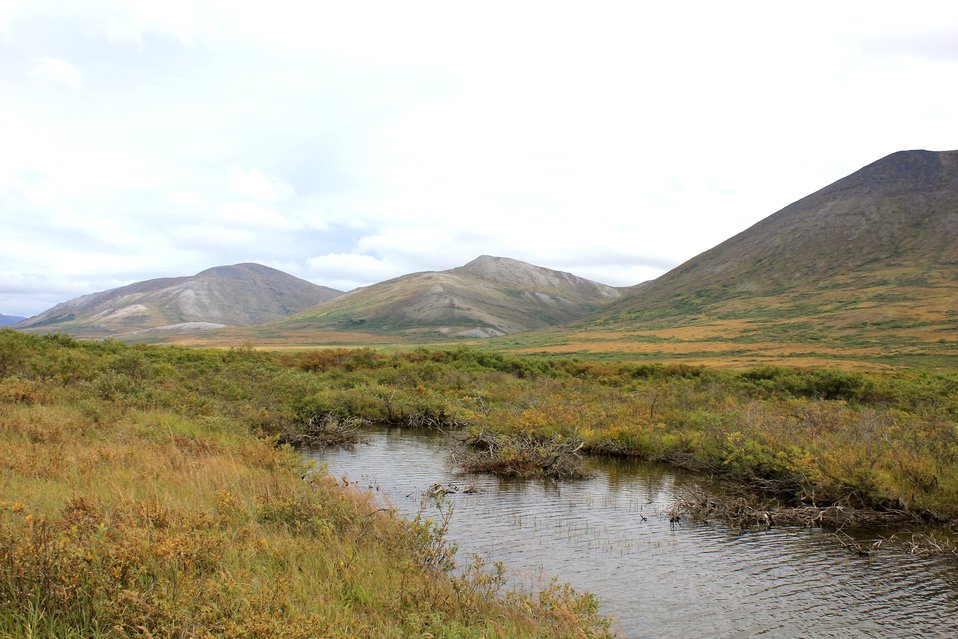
A small stream leading to Salmon Lake north of Nome. Although late August, fall colors are already beginning to show.